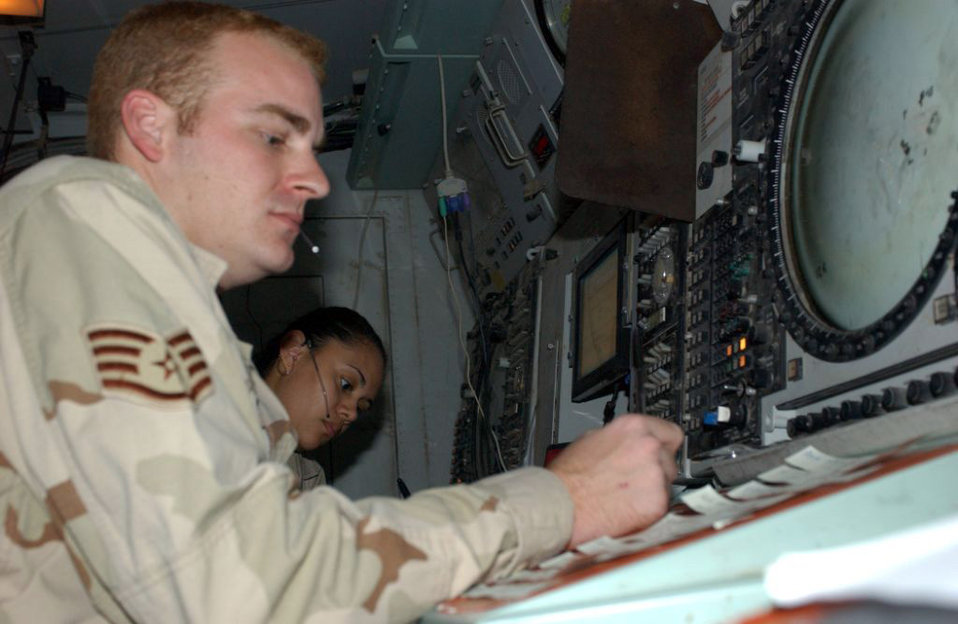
Controllers handle one-third of Iraqi airspace

Staff Sgt. Scott Williams and Senior Airman Andrena Guerra work flight requests at the Ali Base, Iraq, area control center.